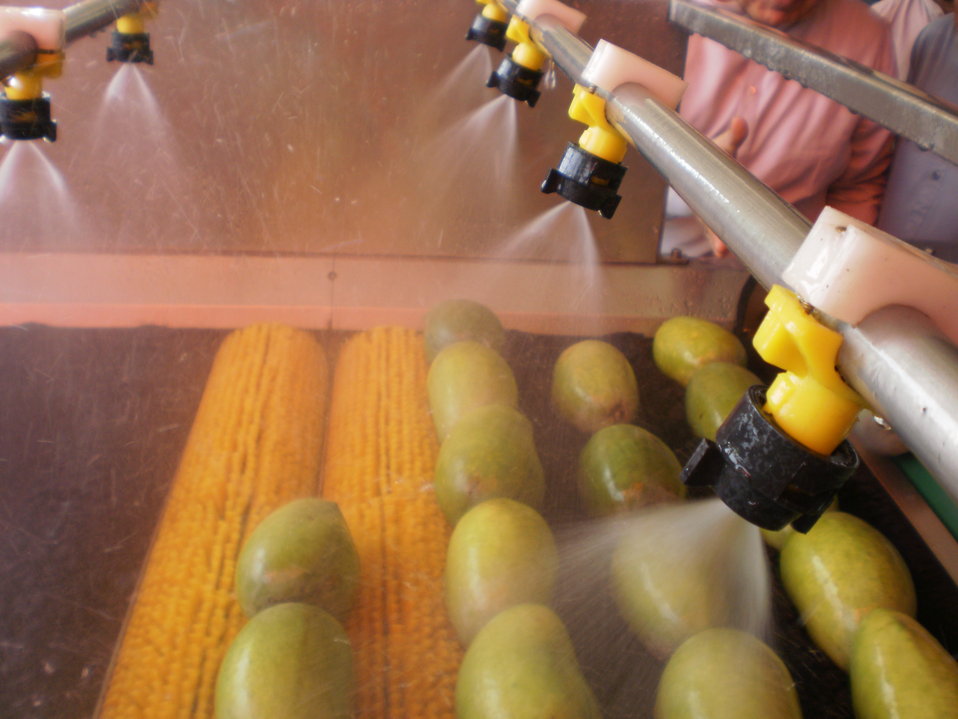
USAID helps Pakistan’s mangoes reach new export markets - 3

With USAID ‘s assistance, export –ready mangoes are being treated through the first-ever processing line developed in Pakistan to meet international standards.